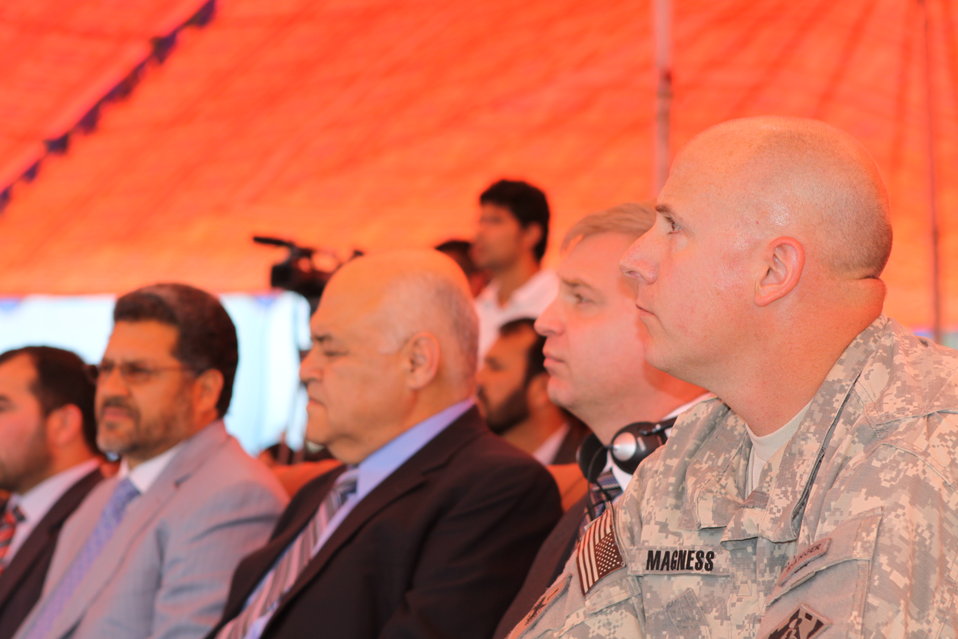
100522 ATVI Graduation 041